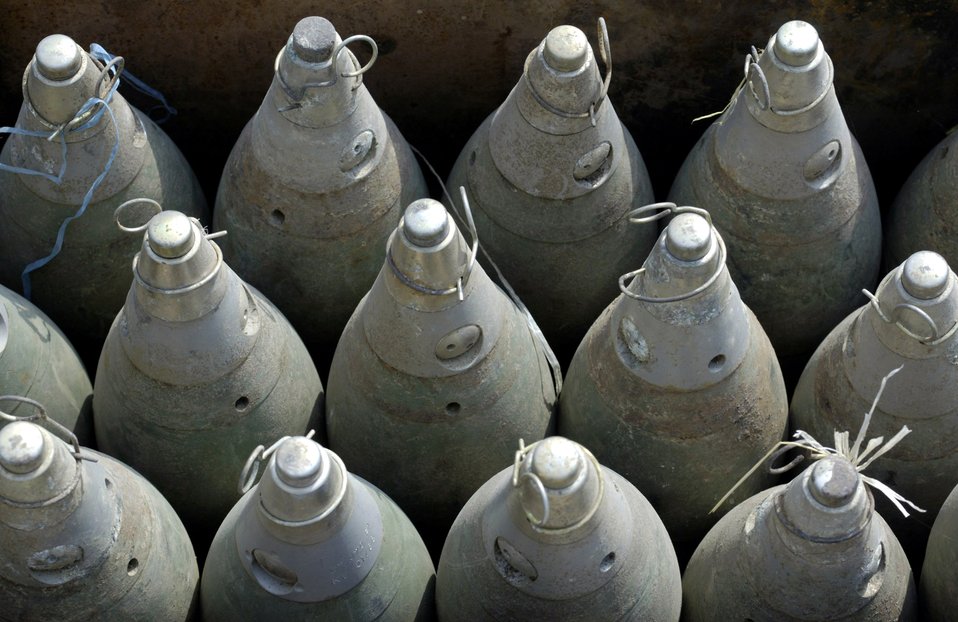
Small rewards program results in big explosion

Munitions are ready for a controlled detonation conducted by Air Force explosive ordnance disposal specialists Sept. 1 at Forward Operating Base Mehtar Lam in Afghanistan's Laghman Province. Nearly 900 pounds of small arms ammunition, rocket-propelled grenades and mortars were turned in by provincial citizens.